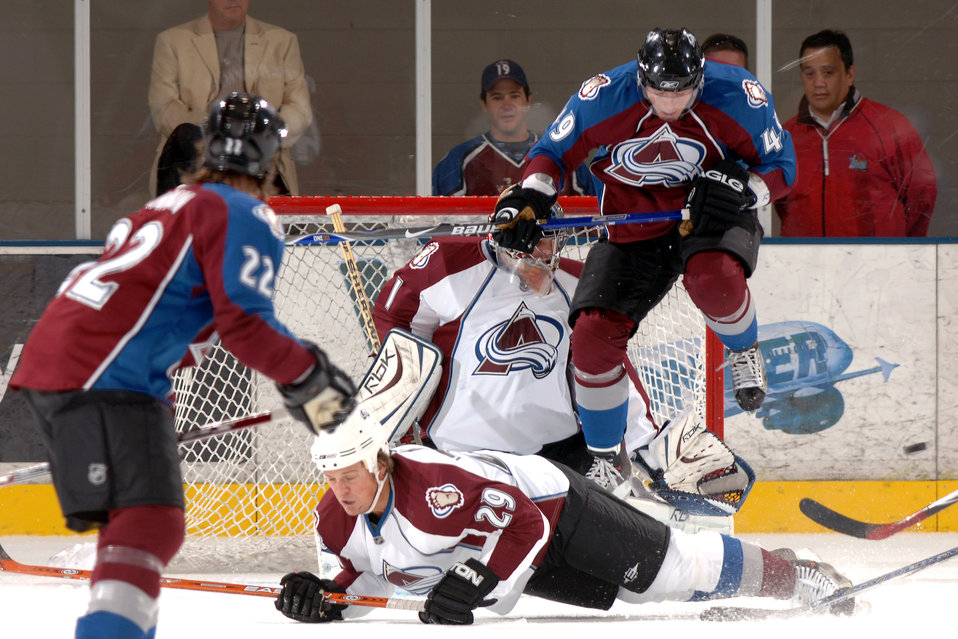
Avalanche breaks the ice at Academy

Colorado Avalanche left wing Victor Oreskovich leaps to avoid the puck and sliding defenseman Jeff Jillson during the Burgundy and White intra-squad scrimmage Sept. 16 at the Cadet Ice Arena at the U.S. Air Force Academy in Colorado Springs, Colo. It was the first time an NHL team ever played at the Academy.